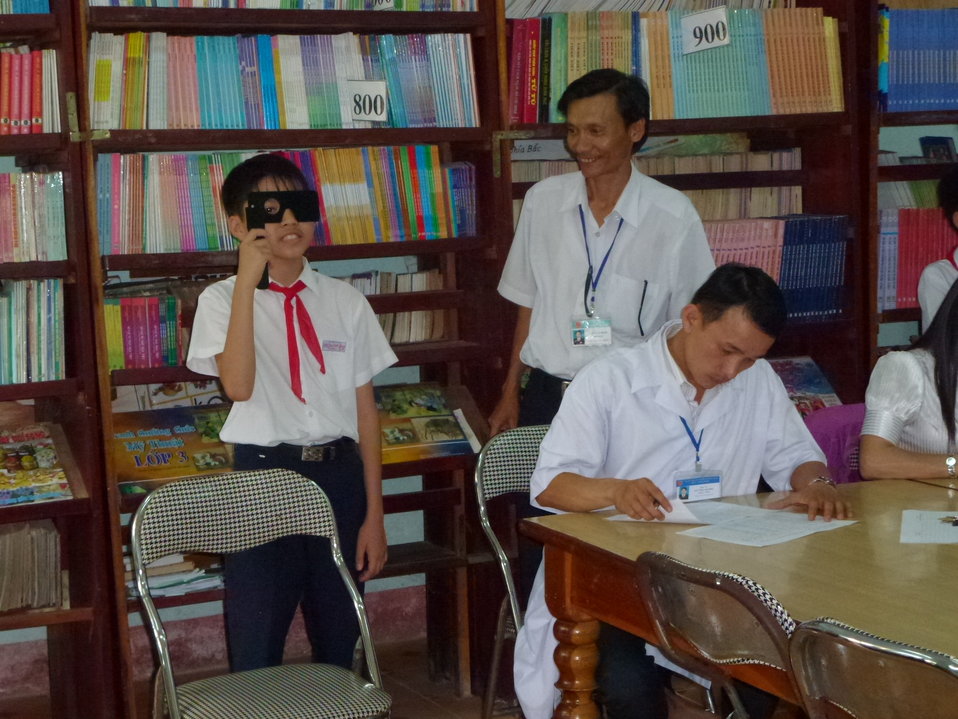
Eye screening at Phan Dinh Phung Primary School

USAID and HKI support refractive error screening examination for students at Phan Dinh Phung Primary School in Kon Tum.